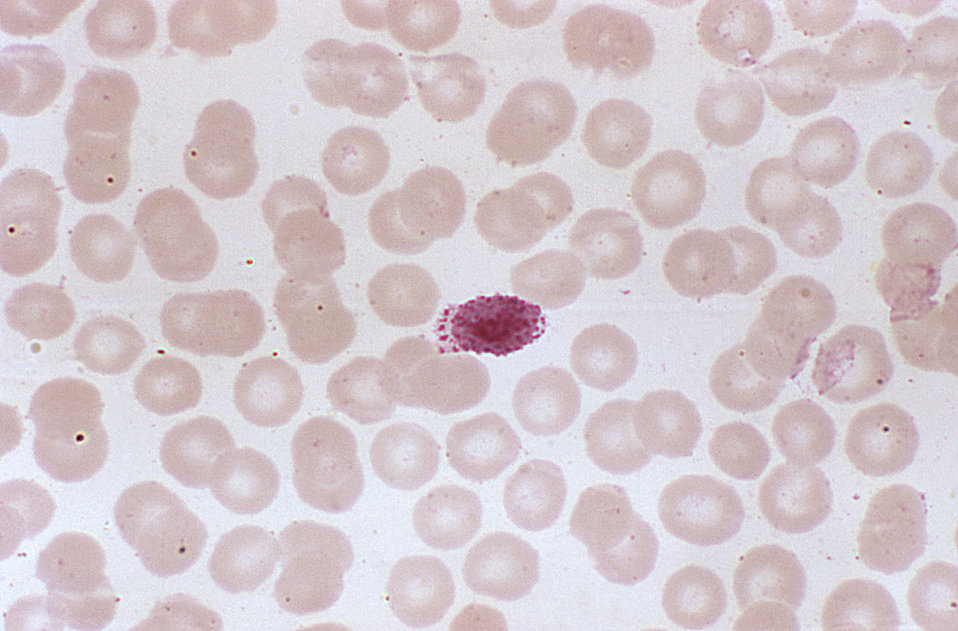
This photomicrograph depicts a P. ovale microgametocyte in an oval red blood cell (RBC); Mag. 1000X.